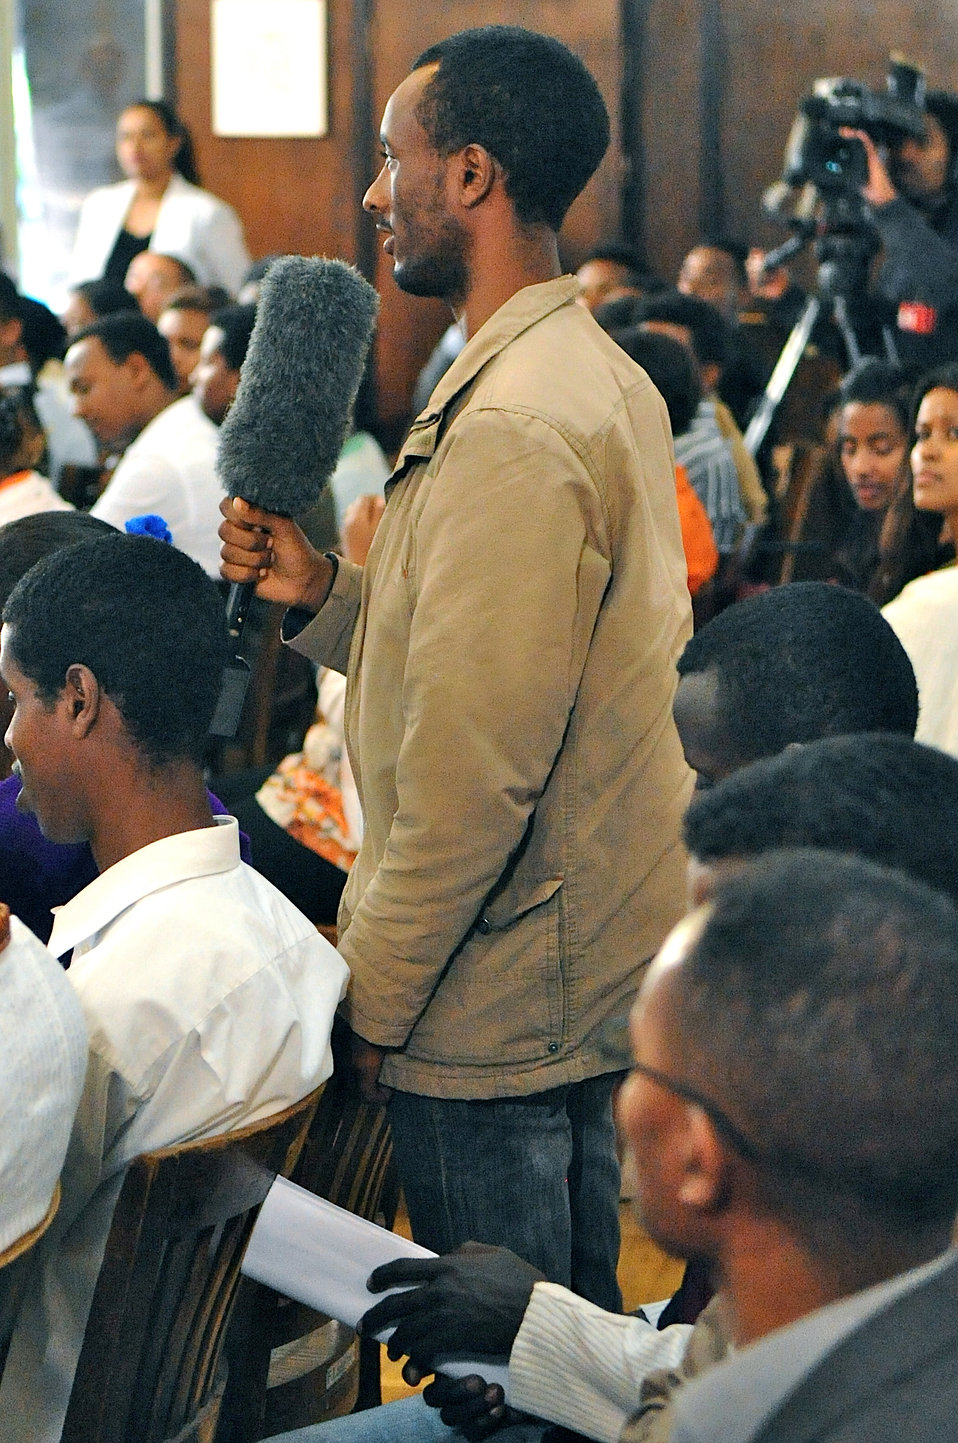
A Young Man Poses a Question to Secretary Kerry in Addis Ababa

A man asks a question of U.S. Secretary of State John Kerry during a special joint BBC 'HARDTalk' and State Department Youth Connect program focused on youth issues at the University of Addis Ababa, Ethiopia, on May 26, 2013.